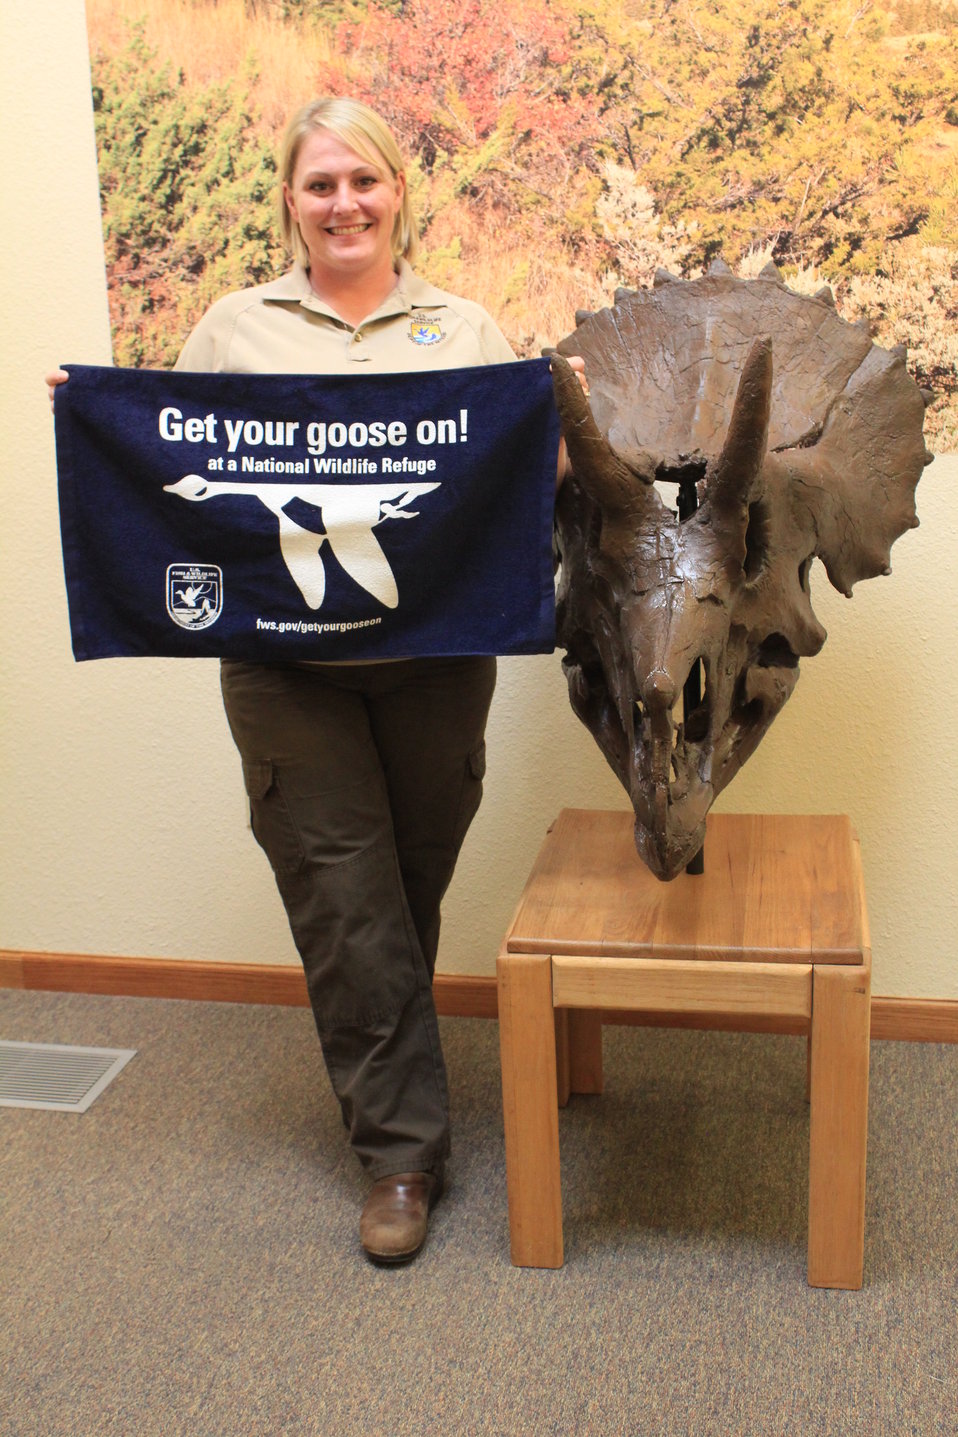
Get Your Goose On! - Triceratops Style